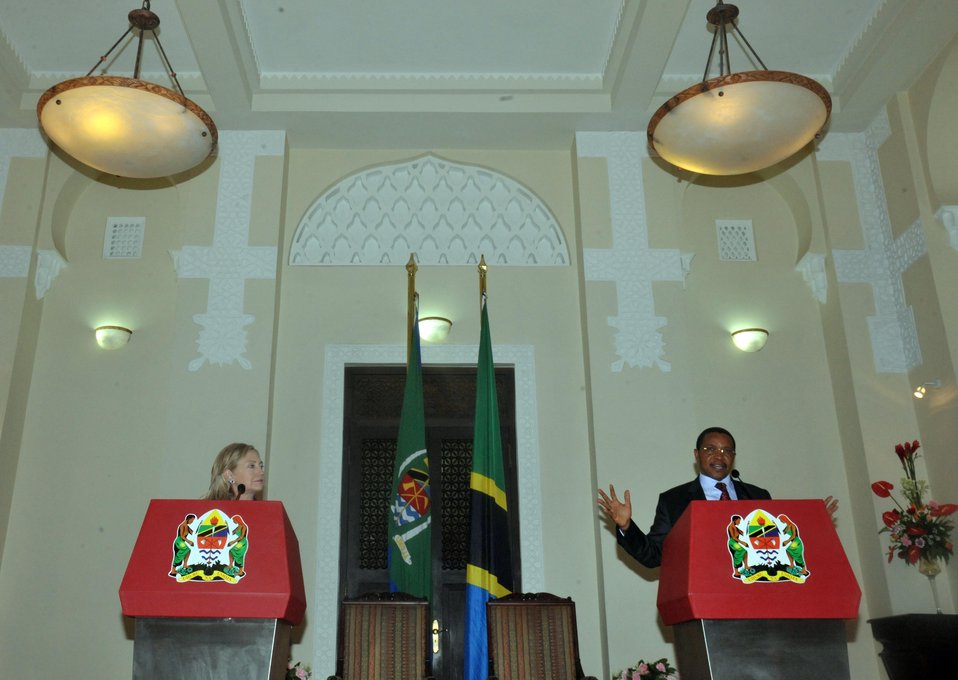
Secretary Clinton Meets With Tanzanian President Kikwete

U.S. Secretary of State Hillary Rodham Clinton, left, holds a joint press conference with Tanzanian President Jakaya Kikwete, right, after their bilateral meeting, at the State House in Dar es Salaam, Tanzania, on June 13, 2011.